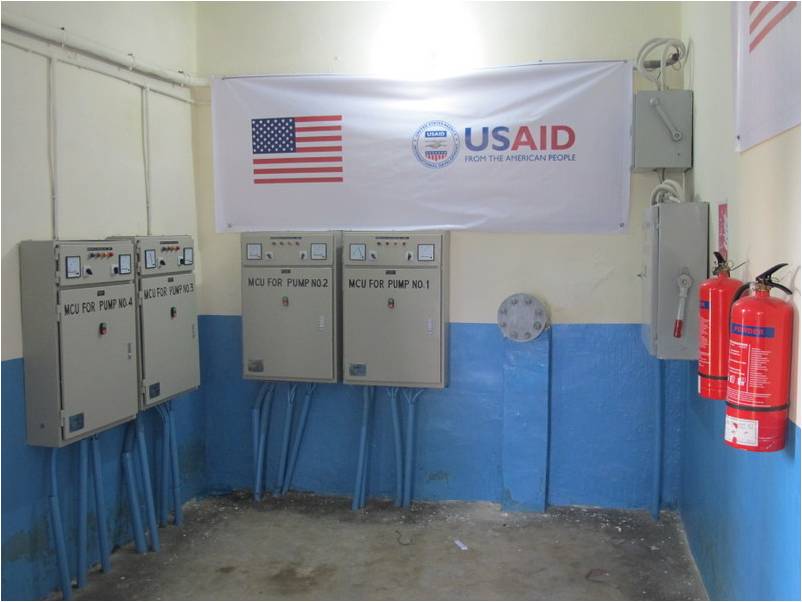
The renovated control room with modern equipment